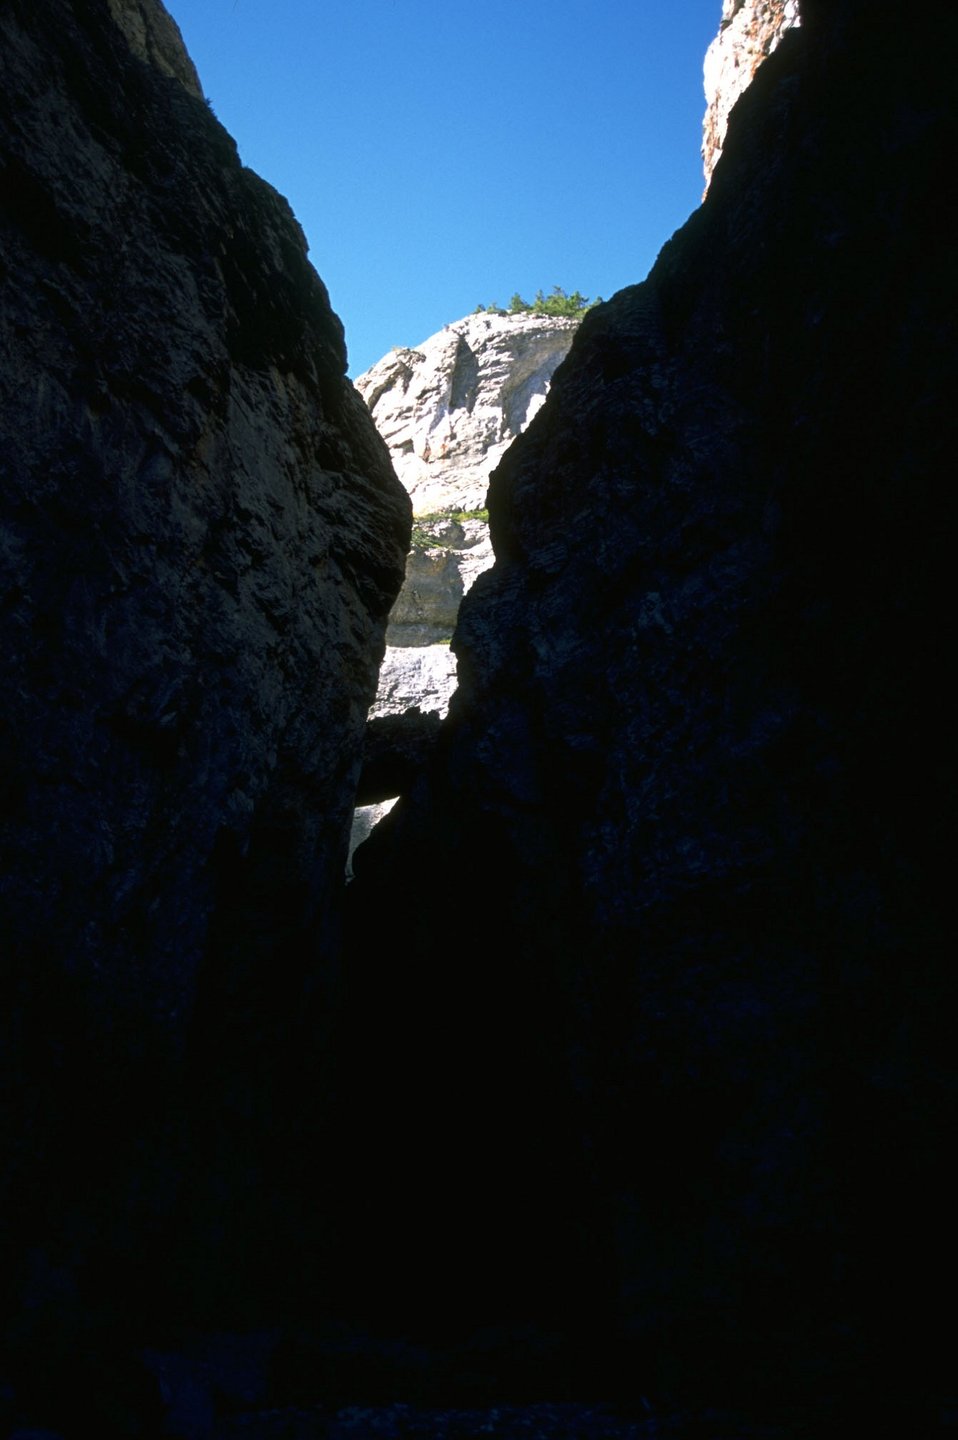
Looking west at Muddy Creek in the Rocky Mountain Front